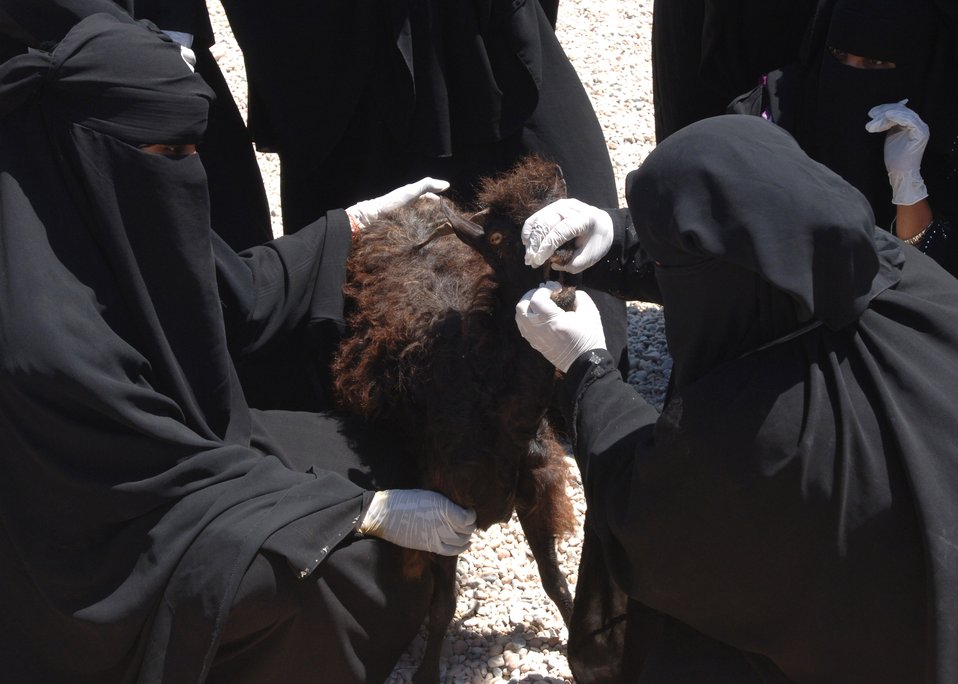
Veterinary project has big impact on small island

Yemen animal health workers examine a goat during training as part of a Combined Joint Task Force-Horn of Africa Veterinary Civic Action Project on the island of Socotra. The objective of the project was to teach women on the island basic animal husbandry techniques.